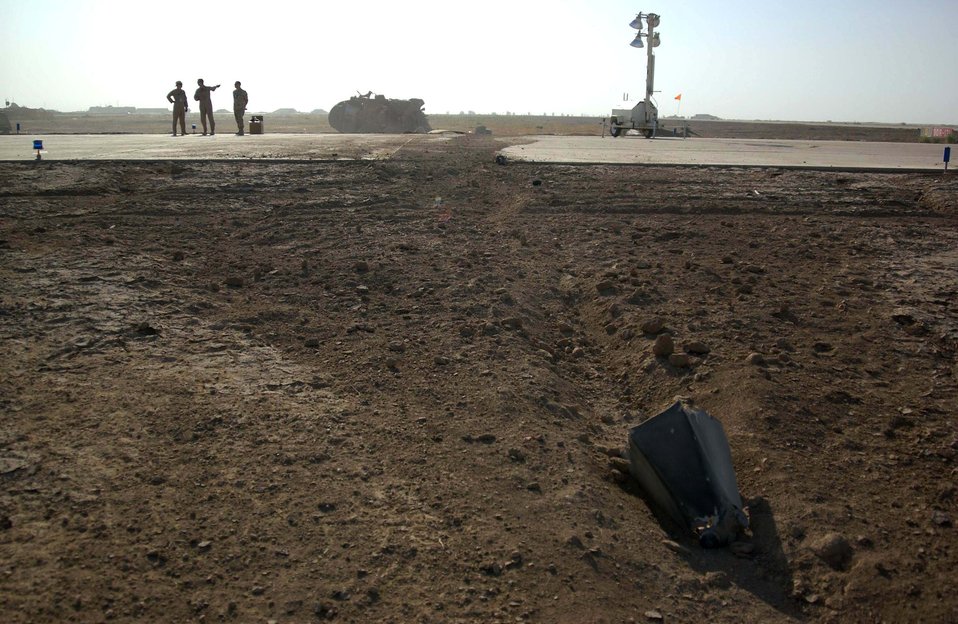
Airmen help save lives following UH-60 crash at Tallil

TALLIL AIR BASE, Iraq -- Wreckage from an Army UH-60 Blackhawk crash Sept. 21 is strewn across the flightline here. All four Soldiers on board were rescued from the helicopter by people of the 407th Air Expeditionary Group and 407th Expeditionary Medical Squadron.